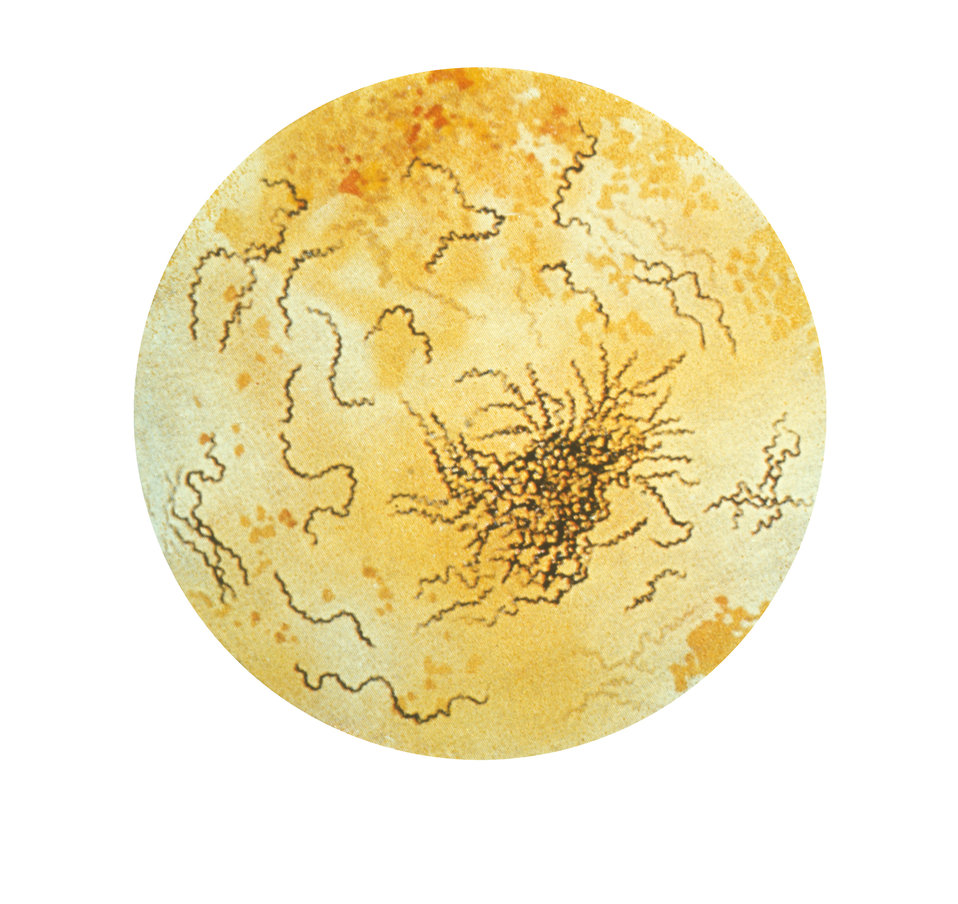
This illustration depicts a photomicrographic view of a Fontana-stained culture specimen revealing the presence of numerous Treponema pallidum bacteria.